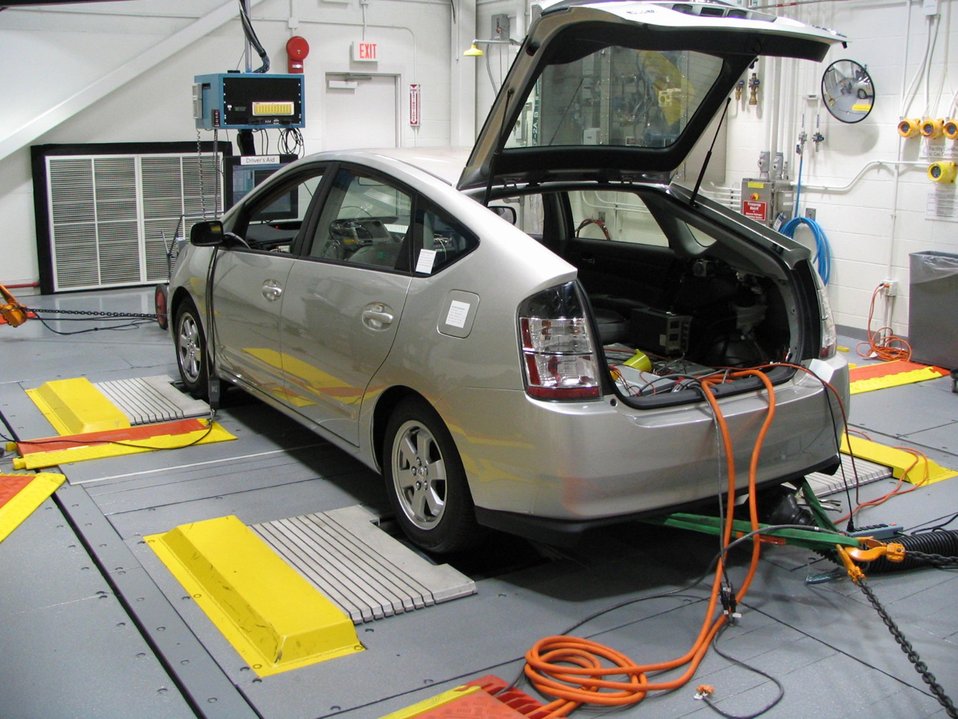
A highly instrumented 2004 Toyota Prius is tested at Argonne National Laboratory. Testing of plug-in-hybrid electric vehicles (PHEV) is done with an emulated battery power source.

The Electric Power Research Institute (EPRI) and ANL announced a three-year collaborative agreement to conduct detailed analysis of plug-in hybrid electric vehicles (PHEVs) aimed at assessing the commercial feasibility of this technology for the U.S. Department of Energy. They will evaluate PHEVs, hybrids and conventional vehicles, assessing them from environmental, cost design and marketing perspectives. It is to provide a balanced and authoritative study of both the advantages and the challenges to design and commercial production of PHEVs.